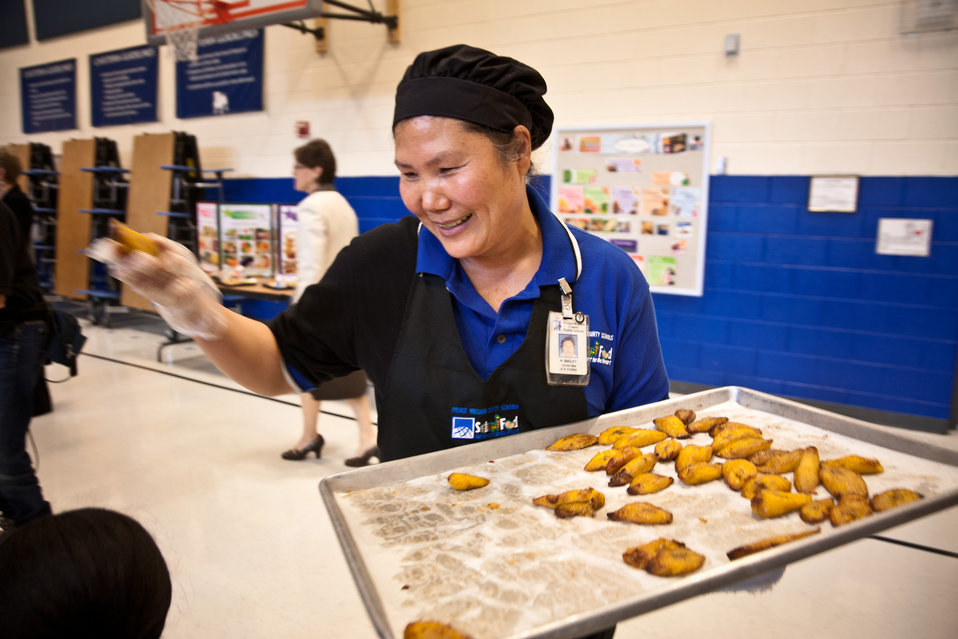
Yorkshire Elementary School Cafeteria Manager Hwasun Bailey, serves plantain samples to more than 50 students from the 5th grade classes at Yorkshire Elementary School in Manassas, VA., participated in a taste testing of the new school lunch menu created to meet the new standards. Students tested a sample menu of black-bean filled pizza, pineapple spear, sunny broccoli and cauliflower toss, and an apple and celery cup with sunbutter dip (a peanut butter substitution), on Wednesday, September 5, 2012.